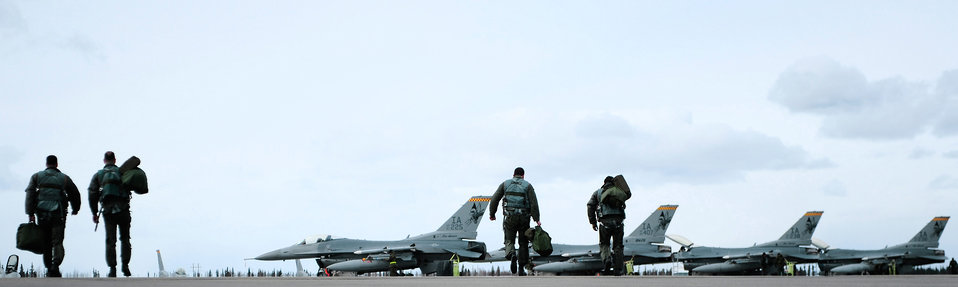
Fly, fight, win: Red Flag-Alaska pilots

Pilots from the 124th Fighter Squadron at Des Moines, Iowa, walk to their F-16 Fighting Falcons during Red Flag-Alaska 09-2 April 24 at Eielson Air Force Base, Alaska. The exercise enables aviation units to sharpen their skills by flying ten simulated combat sorties in a realistic threat environment.